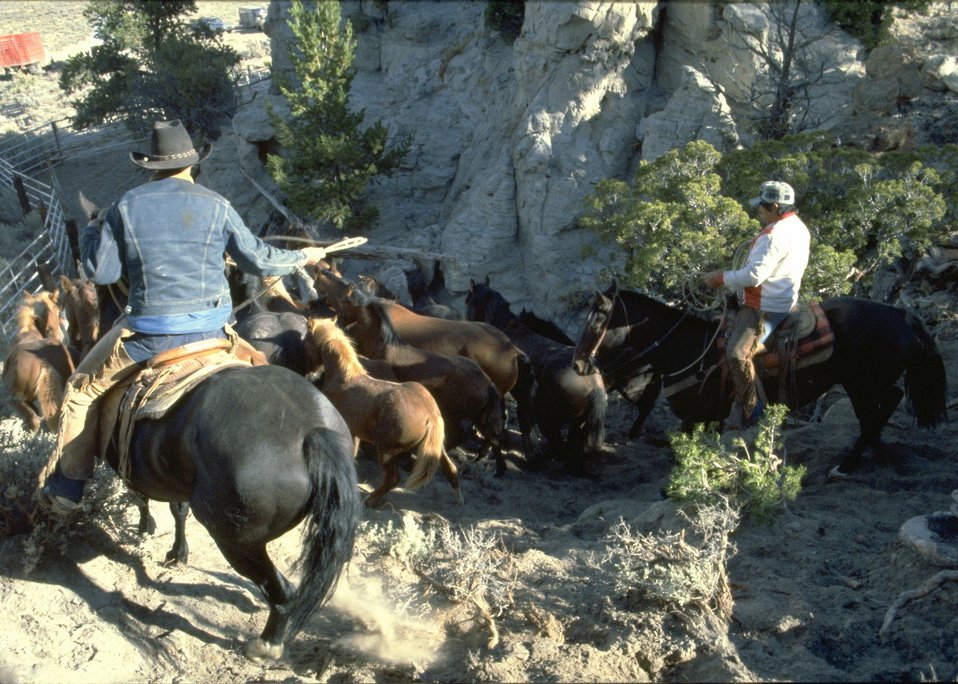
Wild horse round up.